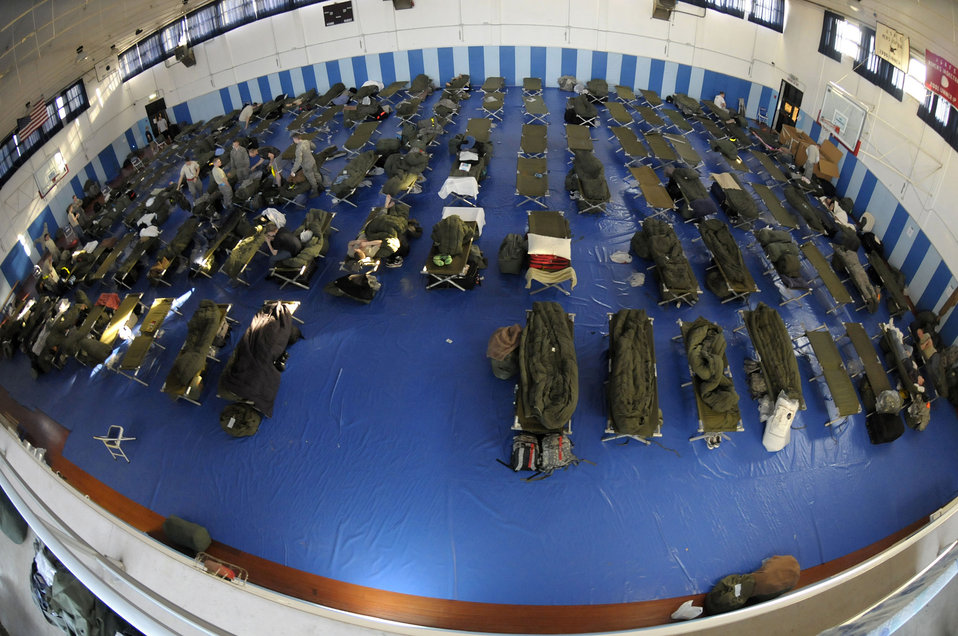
Airmen deploy to Aviano

Service members temporarily reside at the fitness center at Aviano Air Base, Italy, March 22, 2011, while deployed there in support of Operation Odyssey Dawn.